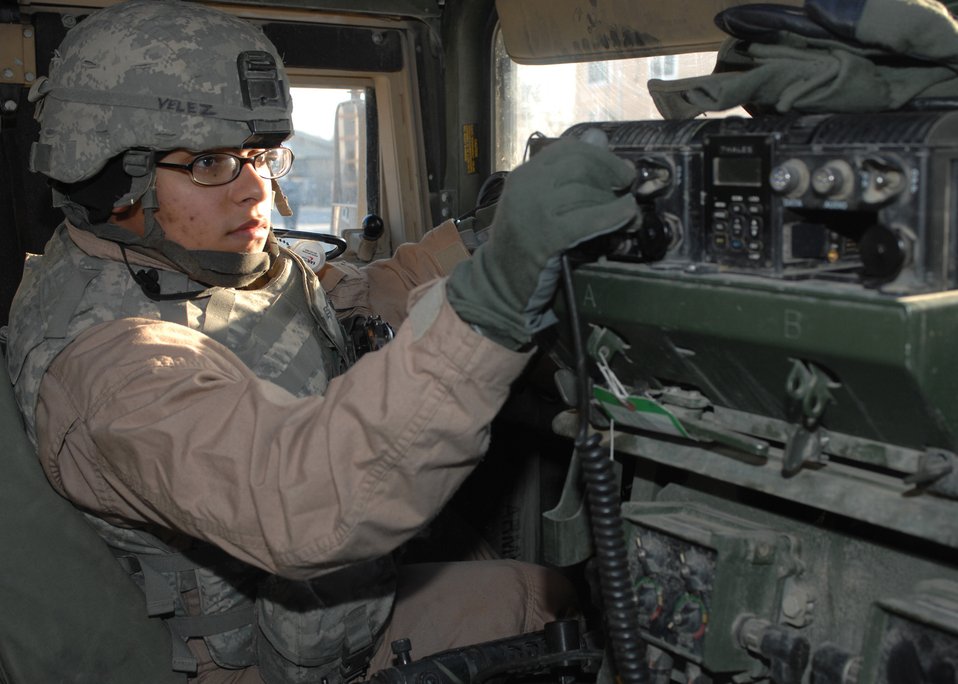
Female Airman from Bronx drives convoys in Afghanistan

Senior Airman Vanessa Velez prepares her Humvee just before her next mission outside the wire Feb. 10 at Bagram Air Base, Afghanistan. Airman Velez, who is a vehicle maintenance controller with the 6th Logistics Readiness Squadron at MacDill Air Force Base, Fla., has driven at least 120 convoys during her 365-day deployment in Afghanistan. She is a convoy driver with the Bagram Provincial Reconstruction Team.